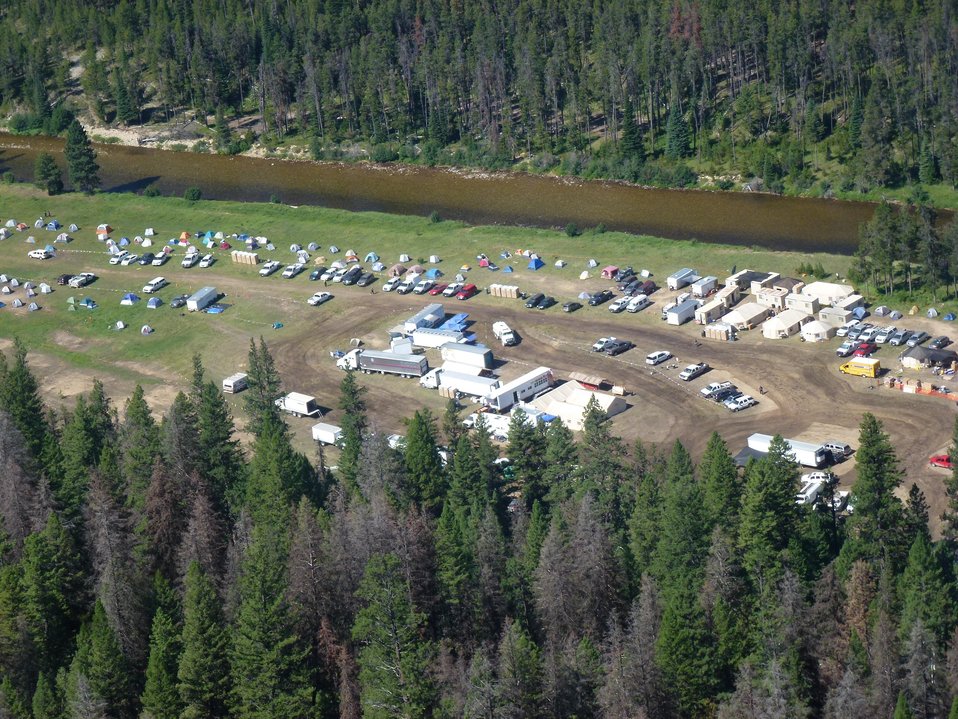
The Thunder City Fire Incident Command Post at Cox Ranch, ID as seen from the air. The Thunder City Fire in the Payette National Forest near Stibnite, ID began on Jul. 19, 2013 by lightning and has consumed approximately 1, 400 acres and is approximately 15% contained.